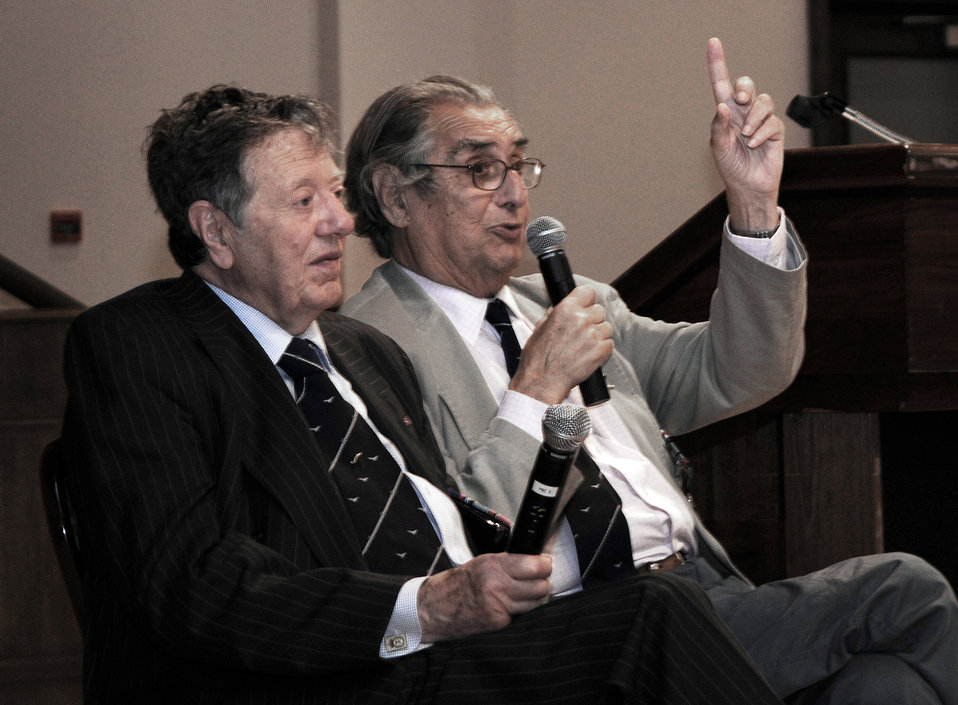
Former RAF POWs share experiences with Mildenhall Airmen

Retired Air Cmdr. Charles Clarke (left) and Andrew Wiseman, former prisoners of war, were two of the guest speakers at the POW/Missing in Action Remembrance Luncheon Sept. 16, 2009, at Royal Air Force Mildenhall, England. The former Royal Air Force airmen told their stories about being shot down over Germany during World War II and their lives in a POW camp.